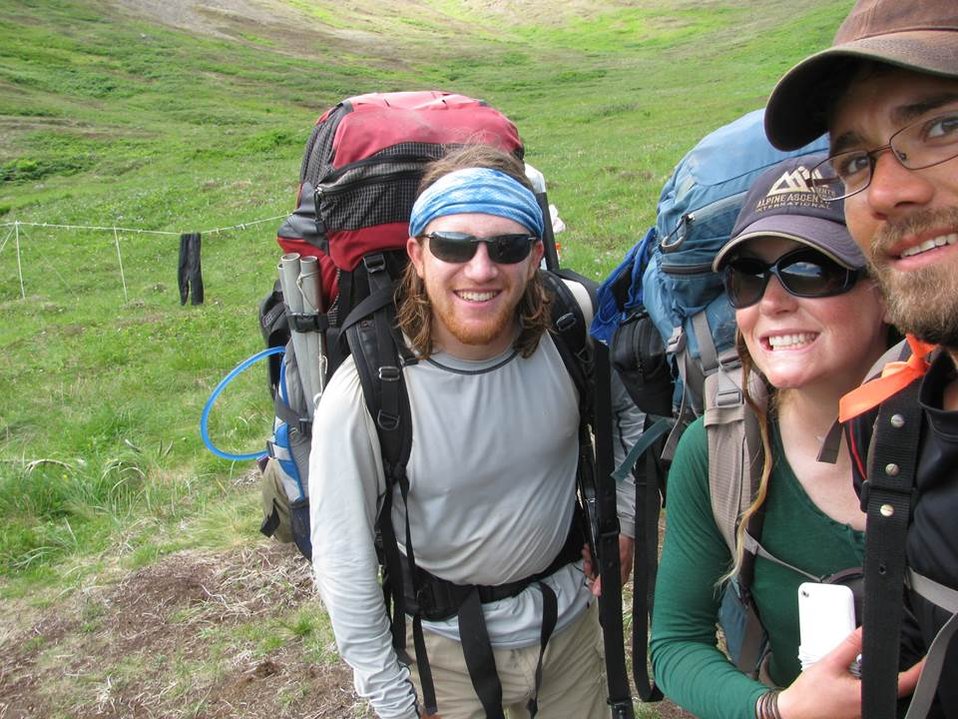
2013 Kodiak-Volunteer(01)

Kittlitz's murrelet 2013 research team (Danny Raleigh, Tamara Payton, and Tim Knudson). - Photo Credit: USFWS 2013 KIMU Crew